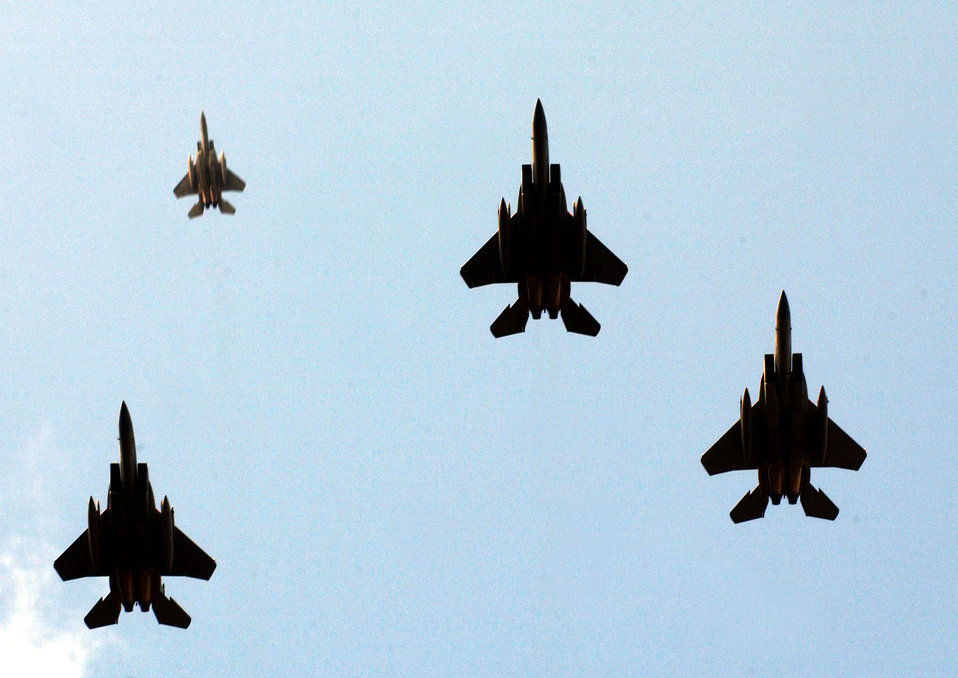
Missing man

OVER ELMENDORF AIR FORCE BASE, Alaska -- A missing man formation flies over the dedication ceremony of the 11th Air Force World War II memorial wall here Aug. 12.